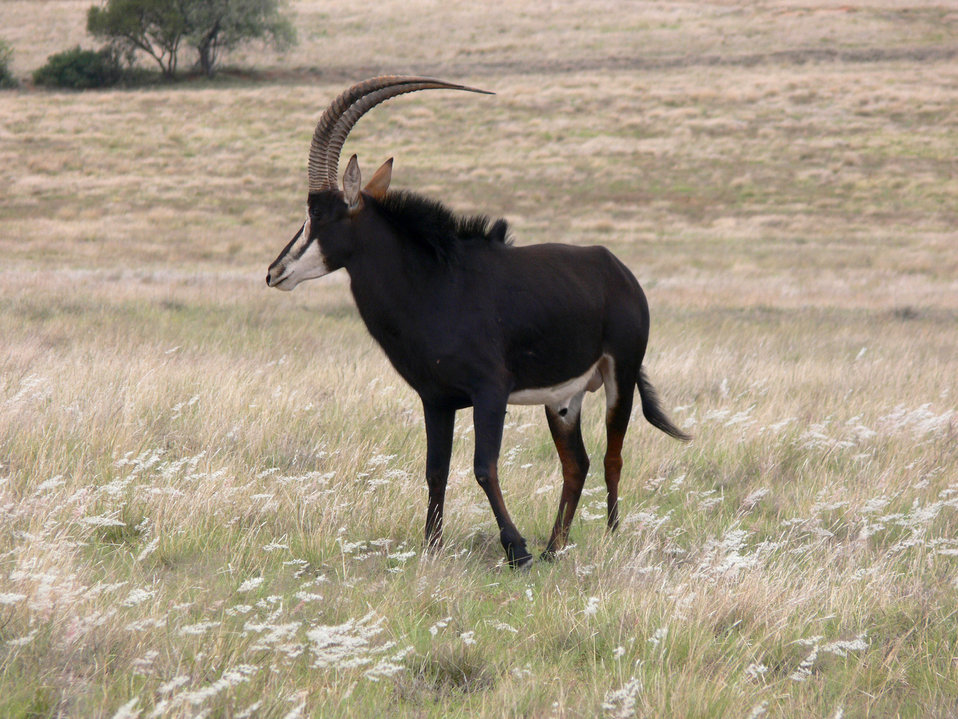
Sable antelope in savannah.